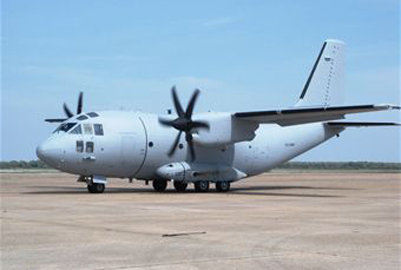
C27J Spartan base

The C-27J Spartan is a twin turboprop aircraft with a short takeoff-and-landing capability that will provide access to airstrips otherwise unreachable by fixed-wing aircraft.